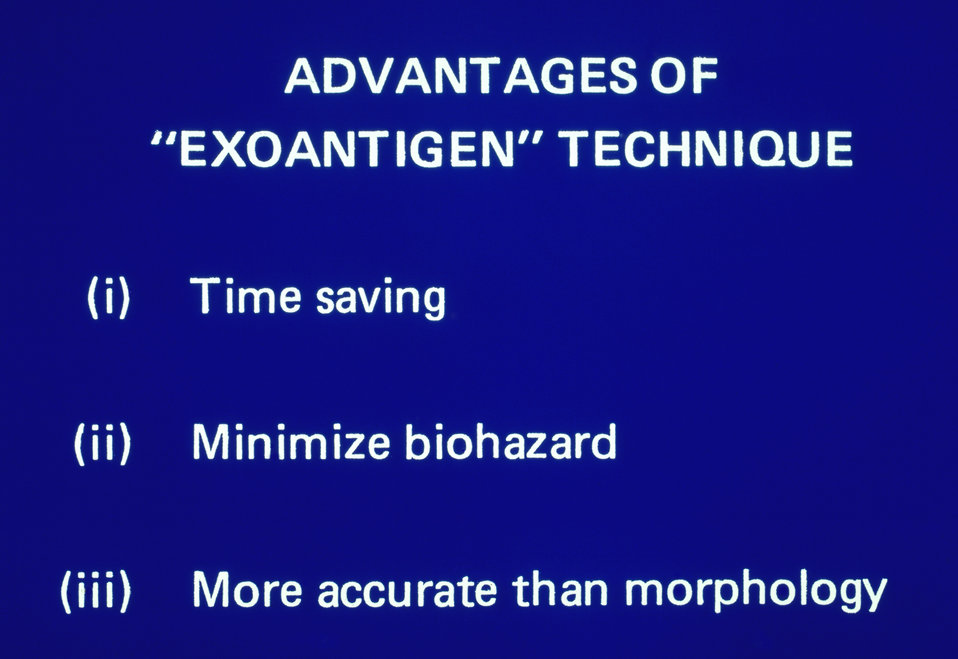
Advantages of "exoantigen technique"